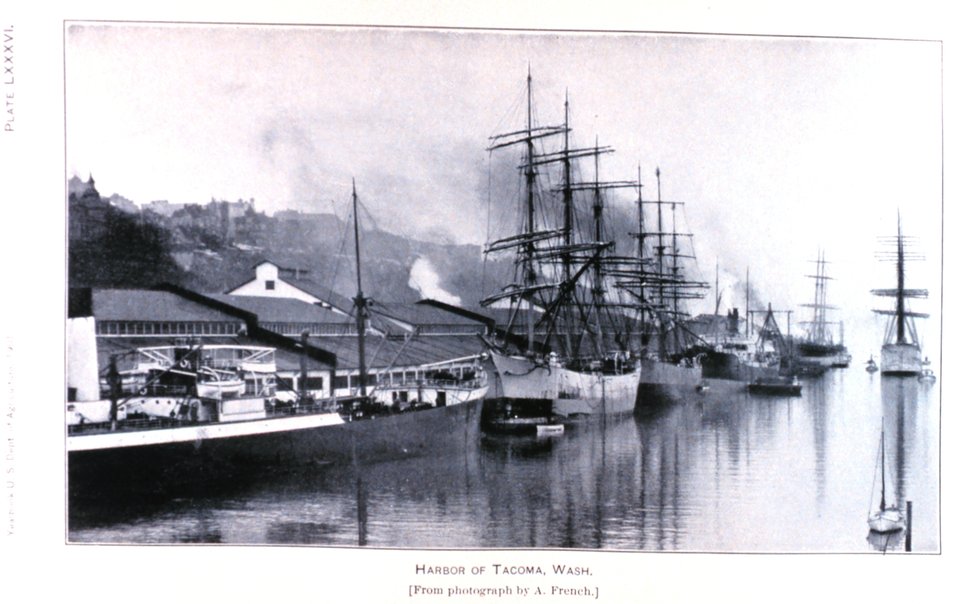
Tacoma, Washington, waterfront. In: 'Wheat Ports of the Pacific Coast' by Edwin S. Holmes, Jr. Published in: Yearbook of the United States Department of Agric ulture 1901. Plate LXXXVI, p. 572. Library Call Number S21 .A2 .